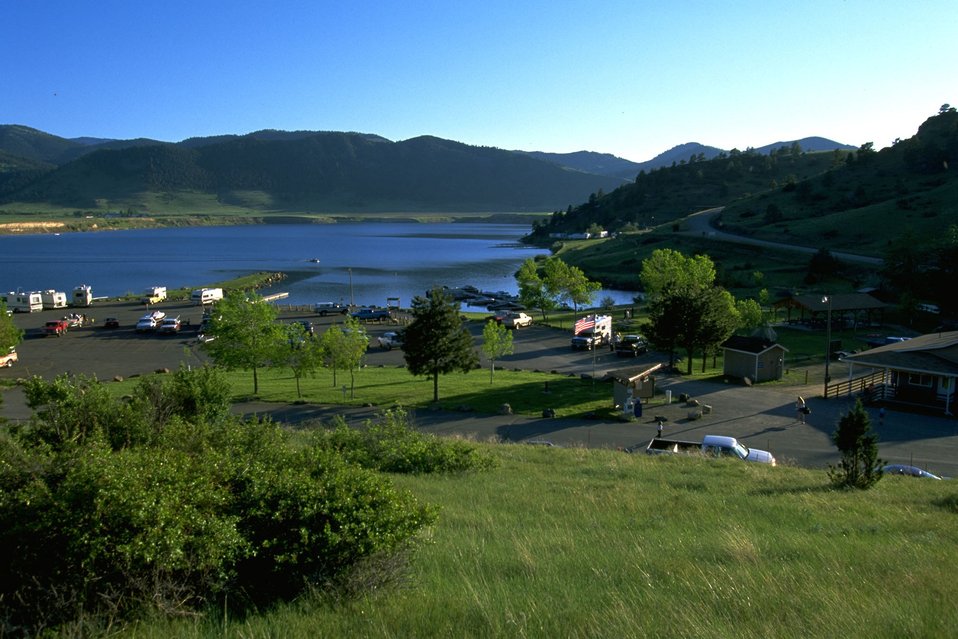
Looking down on the parking area with Holter Lake in the background